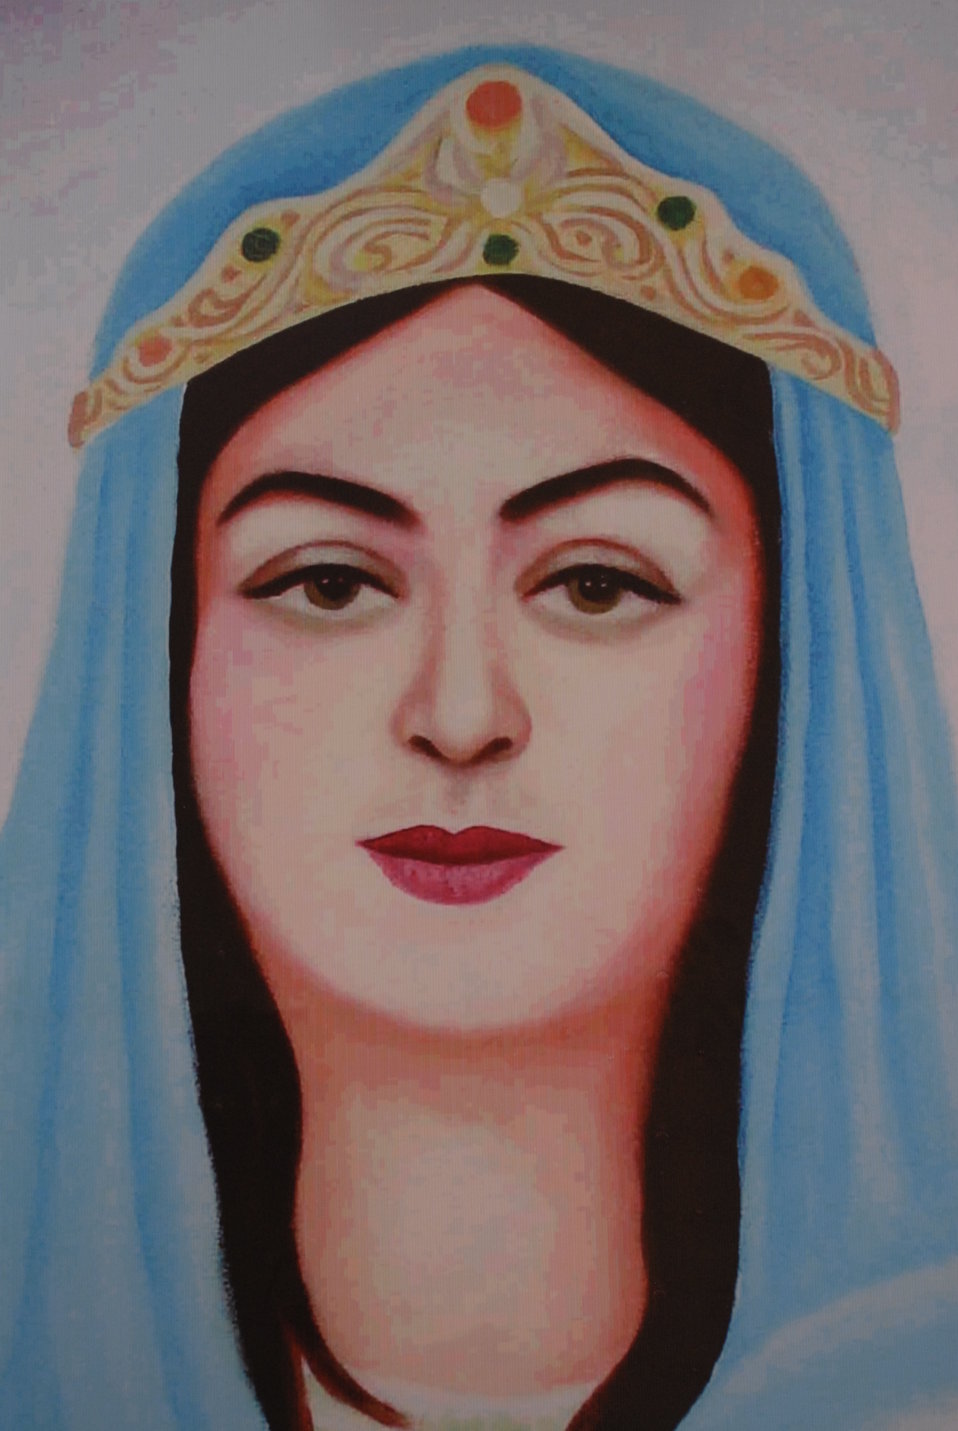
'On the Road' in Balkh Province